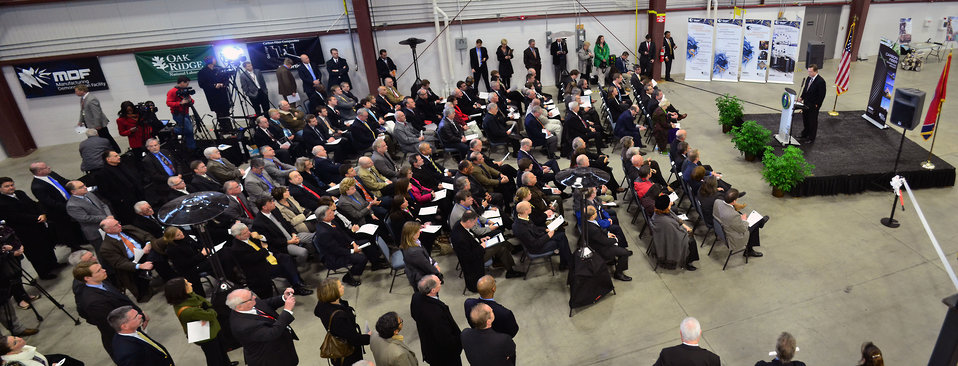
Carbon Fiber Technology Facilty Open House Oak Ridge Tennessee

13-025 DOE photo Lynn Freeny